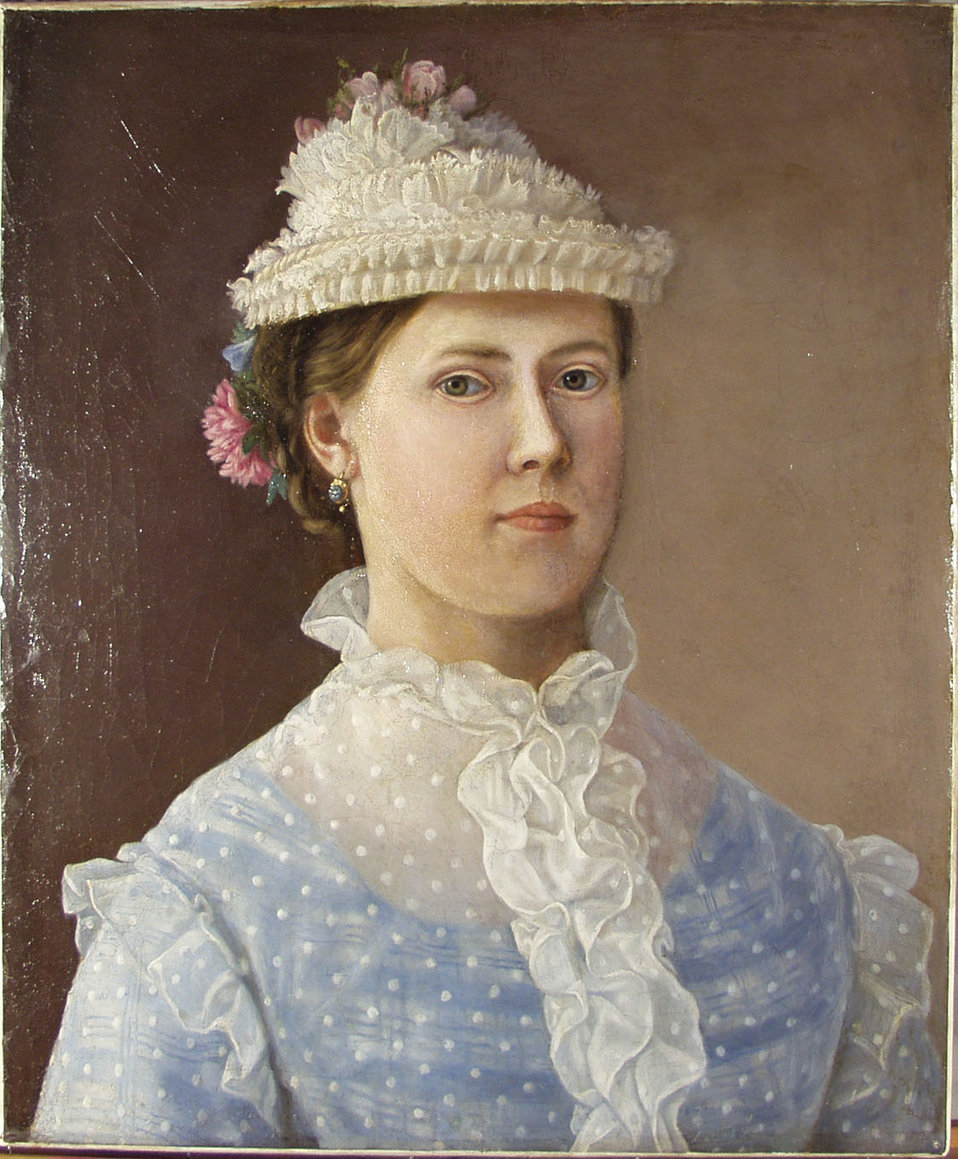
Selbstportrait eienr Dame (rückseitig unleserlich bezeichnet, lesbar: 1874 und „sich selbst gemalt“). Öl auf Leinen; 48,0 x 40,0 cm.